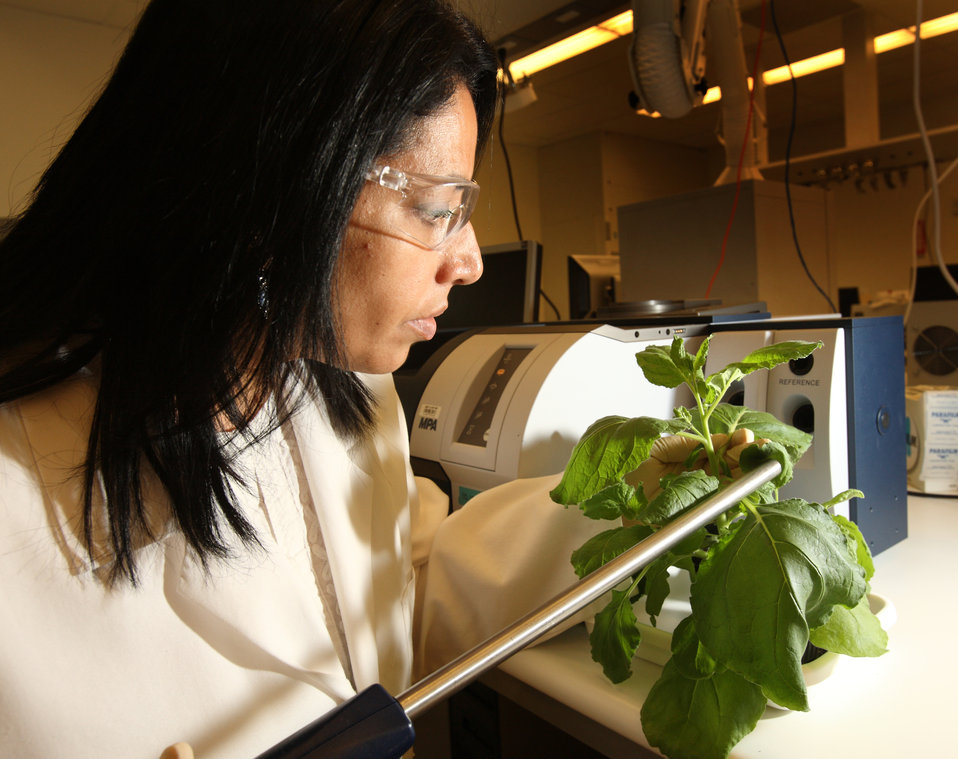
Sandia's Seema Singh is the Director of Material Science-Biomass Pretreatment Dynamic Studies at the Joint Bioenergy Institute in Emeryville, CA

The new center led by Lawrence Berkeley National Laboratory, University of California campuses in Berkeley and Davis, and Stanford University. Research at the DOE JBEI will focus on biofuels-liquids derived from the solar energy stored in plant biomass. Harnessing even a light fraction of the total solar energy available each year could meet most if not all of the nation's annual transportation energy needs. The other two DOE BioEnergy Research Centers are the DOE BioEnergy Research Center led by Oak Ridge National Laboratory and the DOE Great Lakes BioEnergy Research Center led by University of Wisconsin in Madison, Wisconsin in close collaboration with Michigan State University in East Lansing, Michigan.